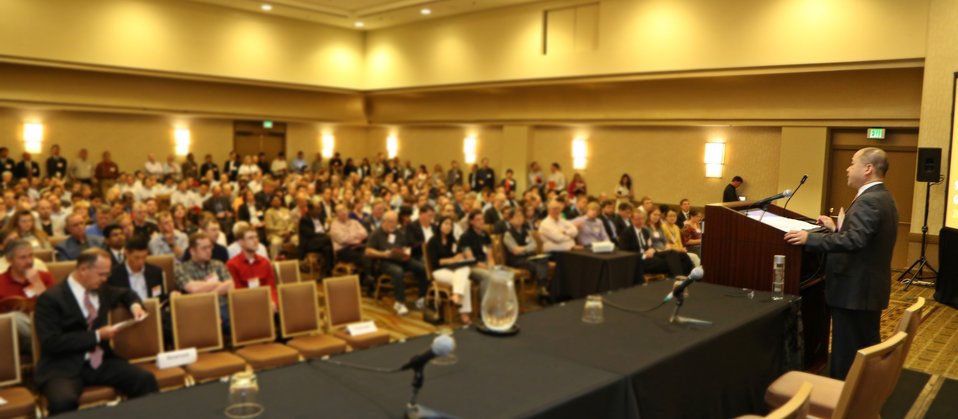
Opening Session 3

SunShot Director Minh Le speaking at the opening session.